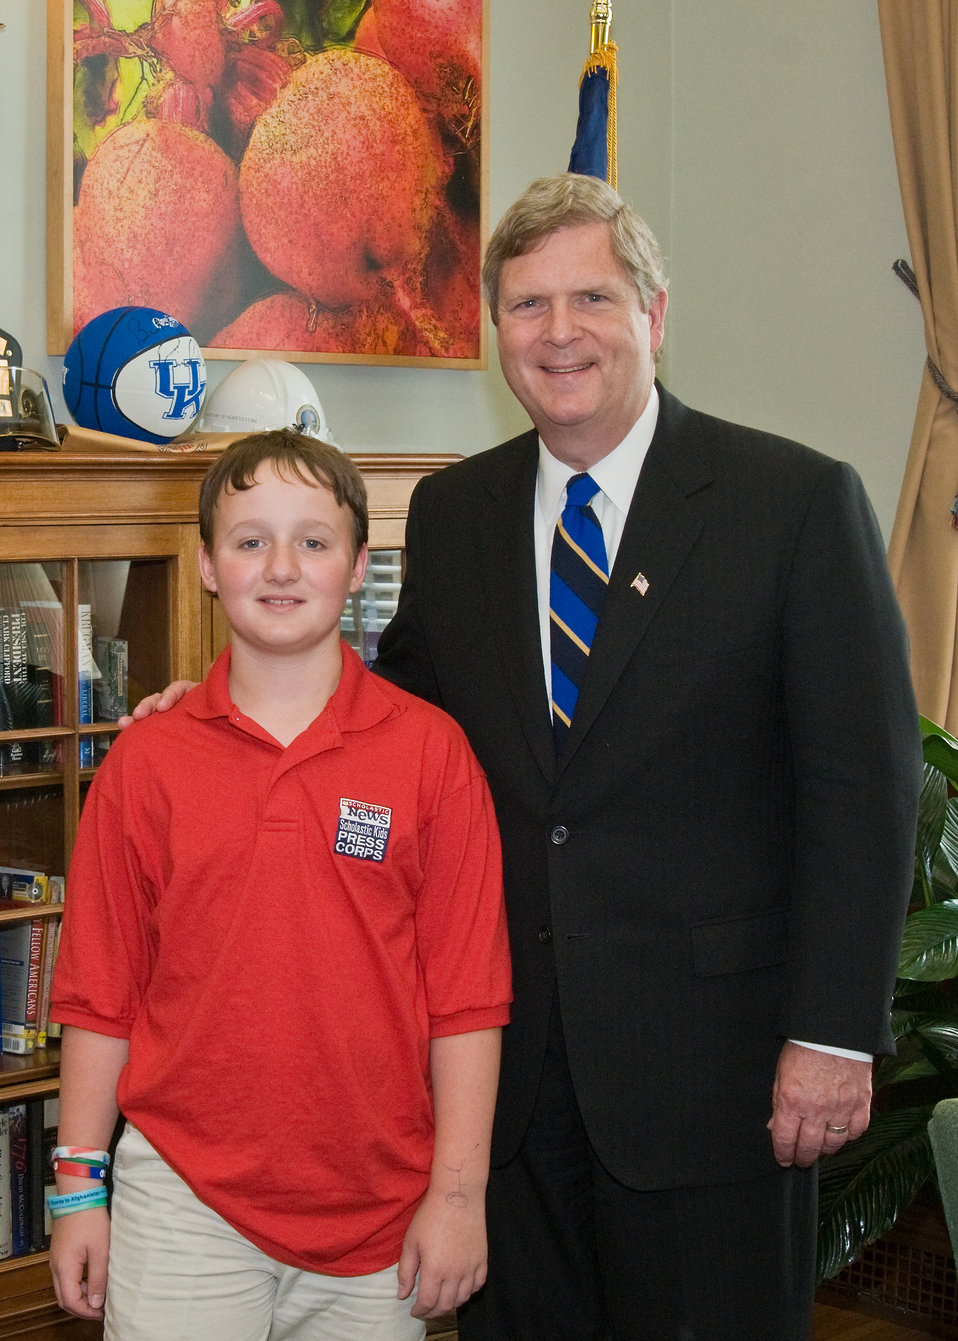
Jonas Hosmer (left) and Agriculture Secretary Tom Vilsack (right) pose for a photograph before Jonas’ interview with Secretary Vilsack on Wednesday, May 19, 2010, The interview took place in Secretary Vilsack's office in Washington, D. C. Jonas a reporter with the Scholastic Kids Press Corps mentioned, “I’m very curious, and I have an open mind to what’s going on around me. I enjoy interviewing people and learning more about them. Unlike some kids, I’m very comfortable talking with adults and kids, no matter who they are.” USDA Photo 10di1362-08.